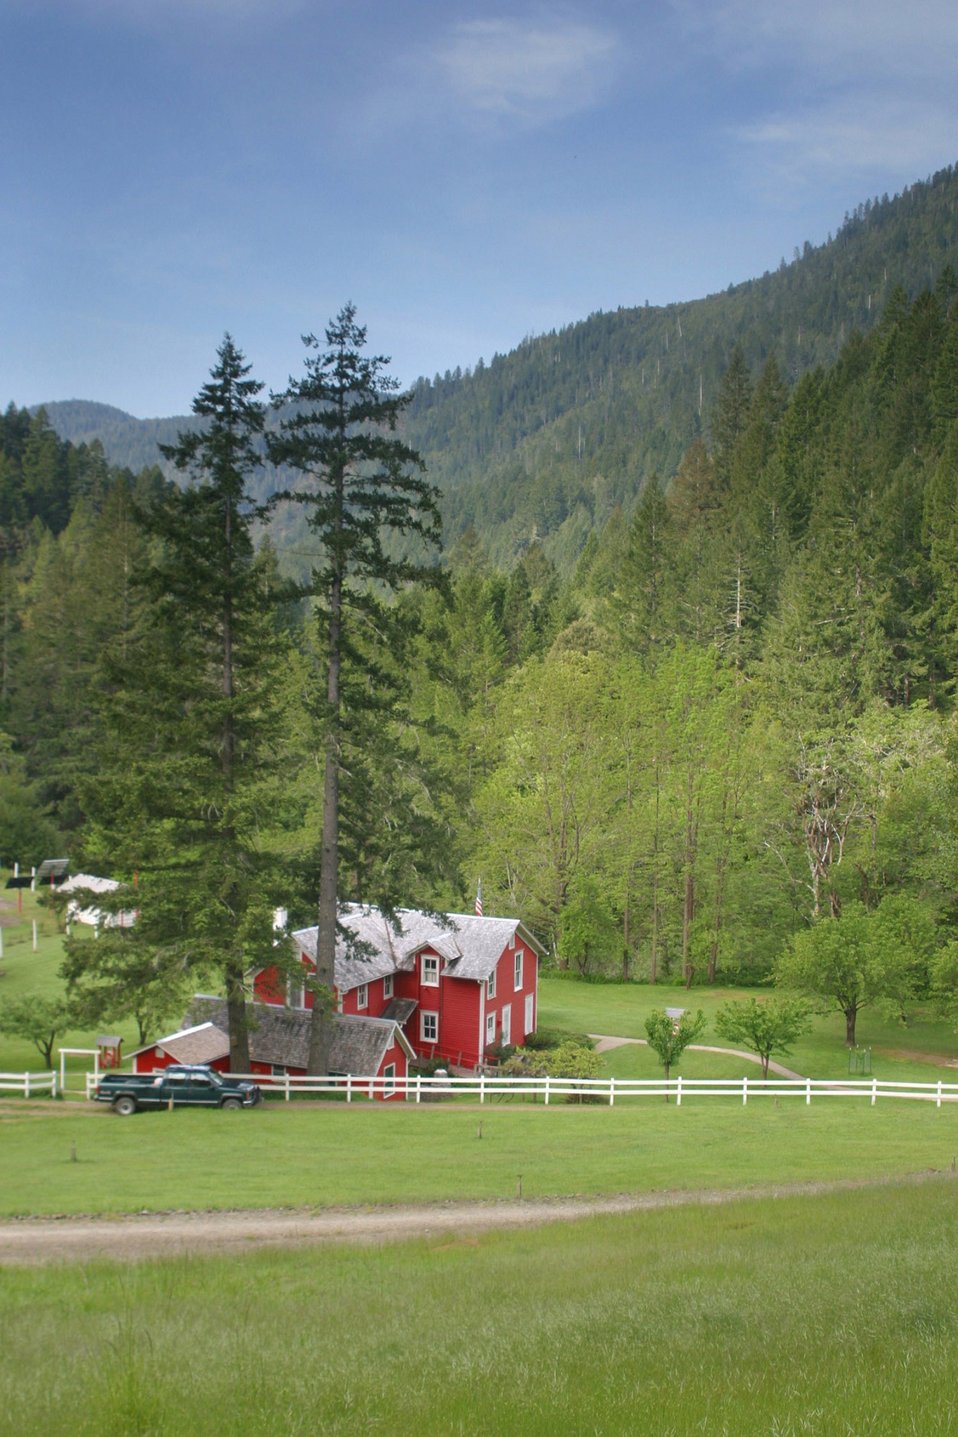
Wild section of the Rogue River from Grave Creek to Foster Bar May 19 to May 22.